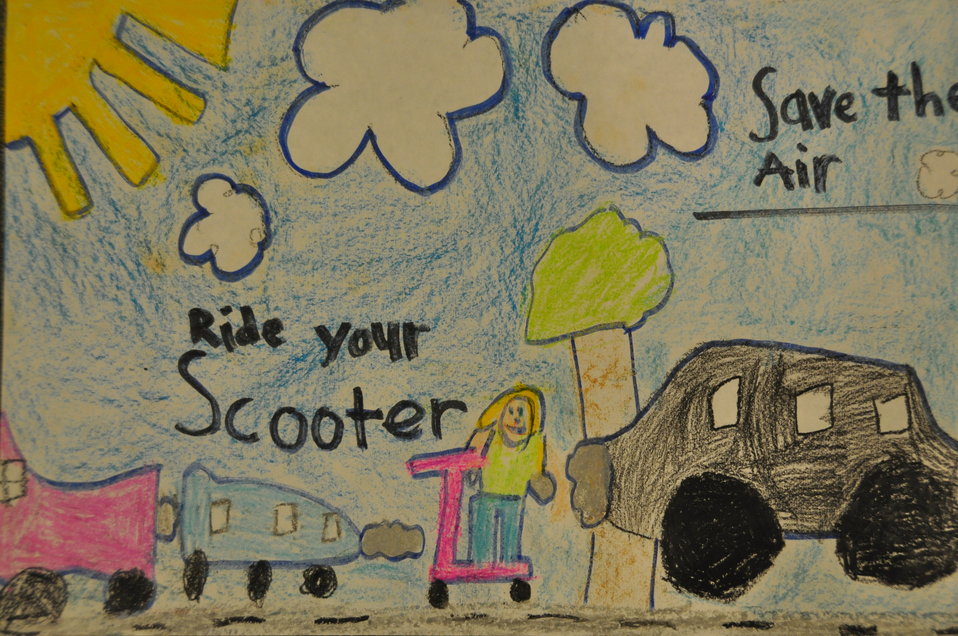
Victoria, Grade 2, Connecticut